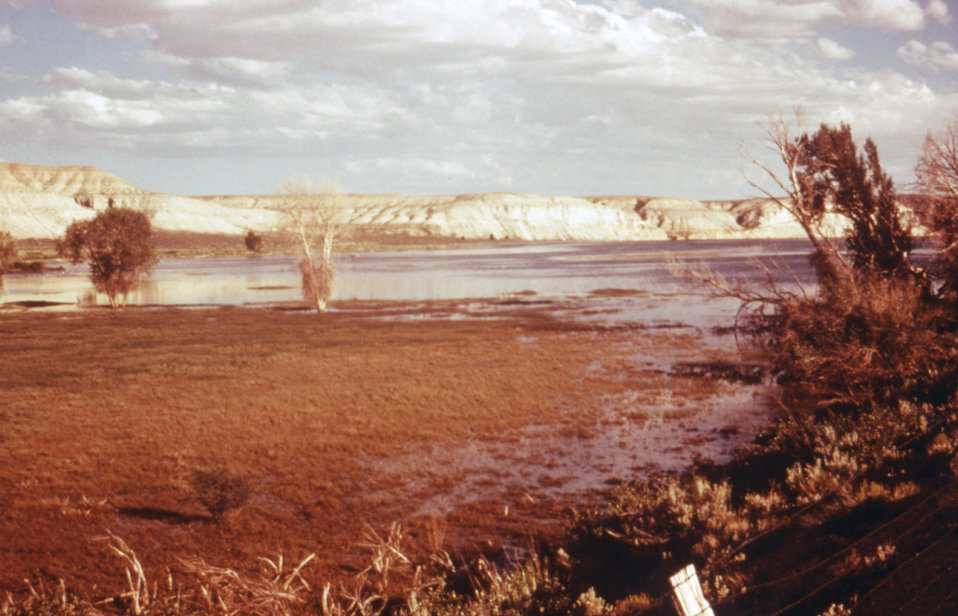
This 1976 photograph shows the shallow grassy edge of the Fontanelle Reservoir in Wyoming.